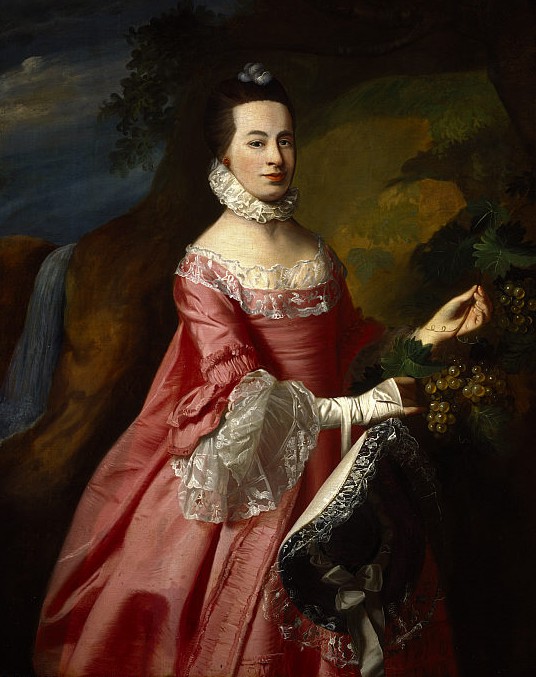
John Singleton Copley00